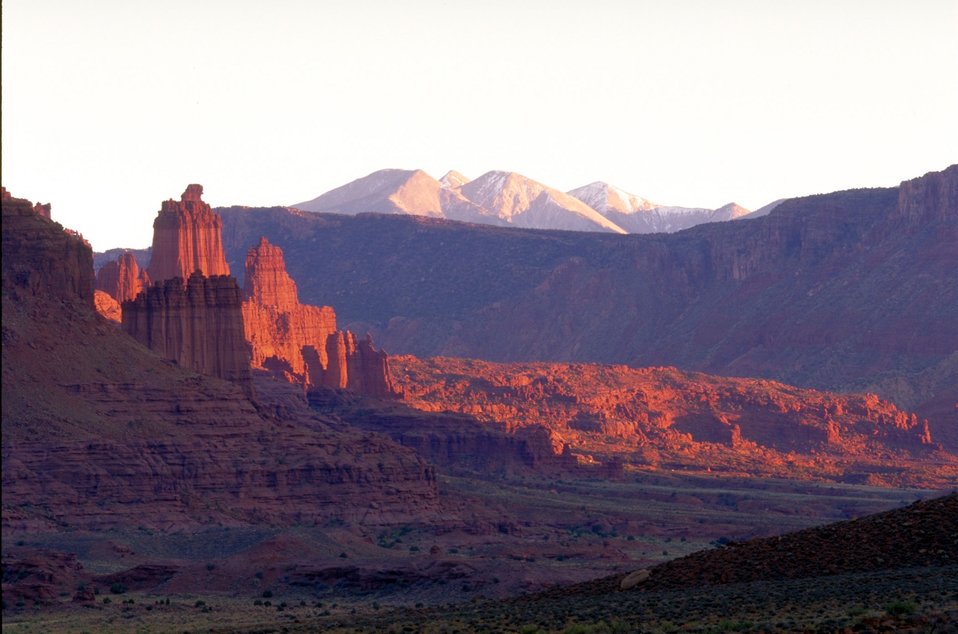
Fisher Towers along Highway 128, near Moab, Utah.